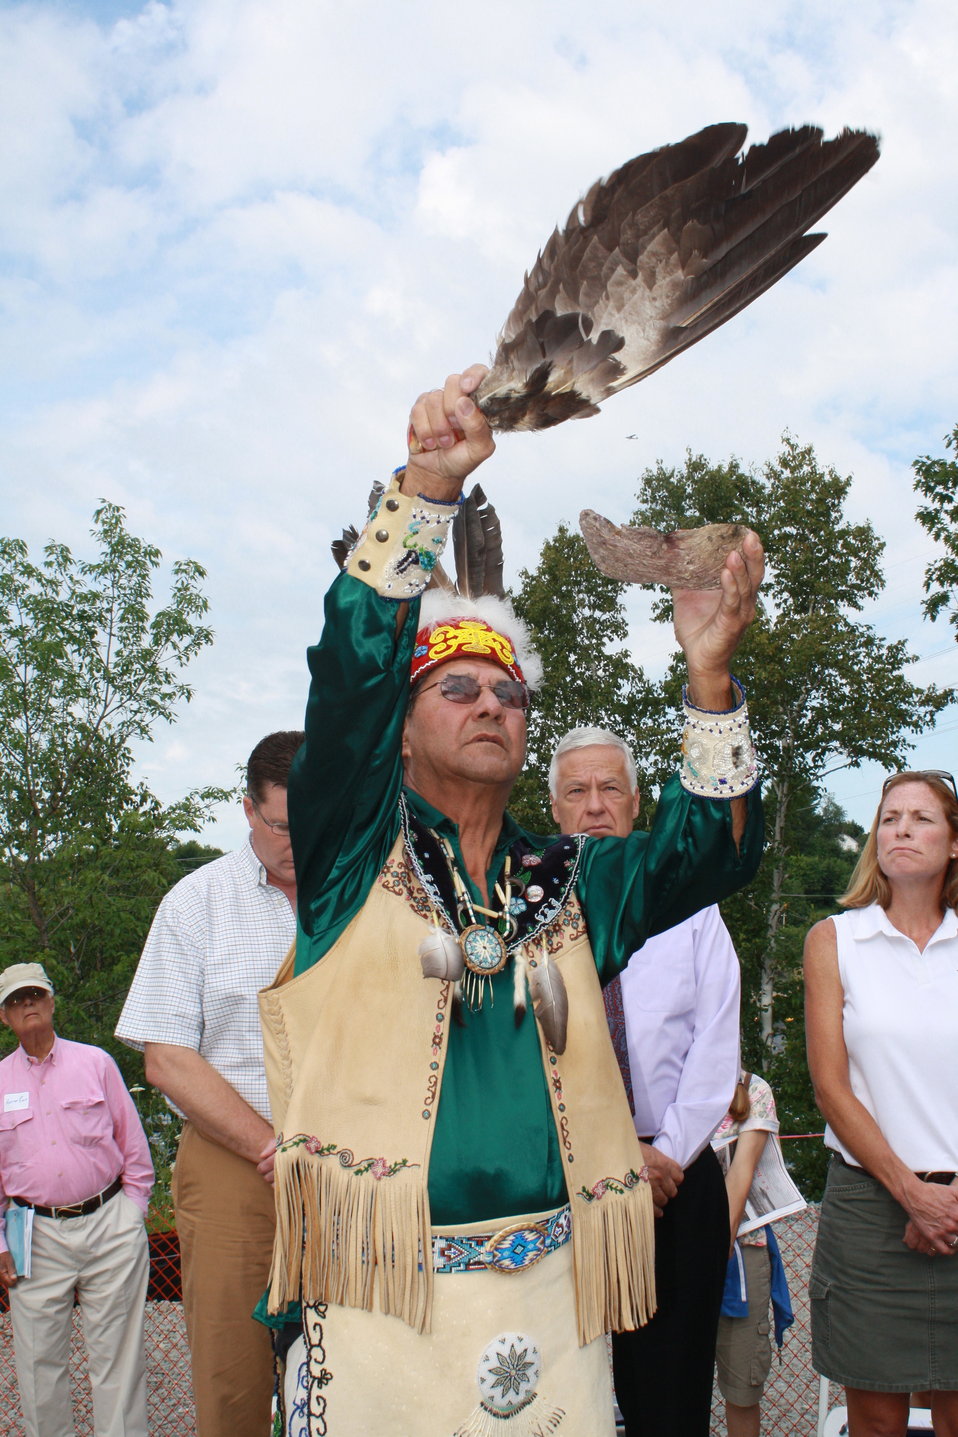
Veazie Dam Removal

Penobscot Indian Nation Elder Butch Phillips continues the traditional smudging ceremony.